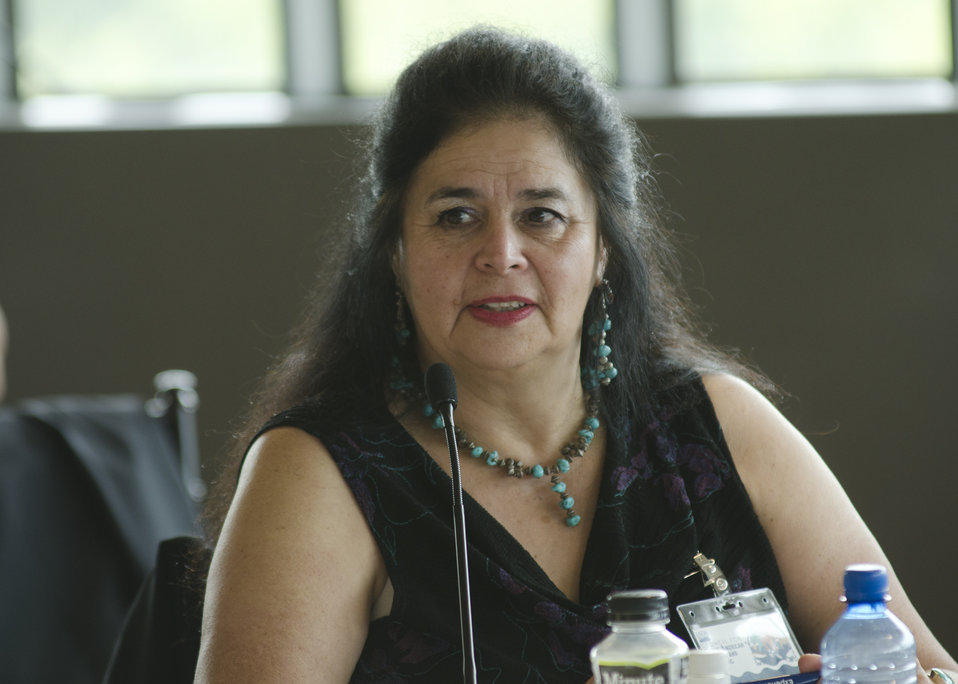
Director Tribal Relations and Designated Federal Official (DFO) for the Council, Joanna Mounce Stancil listens to speakers at the first business meeting of the U.S. Department of Agriculture’s (USDA) Council for Native American Farming and Ranching (CNAFR) held at the National Museum of the American Indian in Washington, D.C., on Tuesday, Aug. 14, 2012. CNAFR was created to advise the Secretary on ways to eliminate barriers to participation for Native American Farmers and Ranchers in USDA programs. The Council was established as part of the Keepseagle settlement, and is conducted under the oversight of USDA's Office of Tribal Relations under the Office of the Secretary of Agriculture.